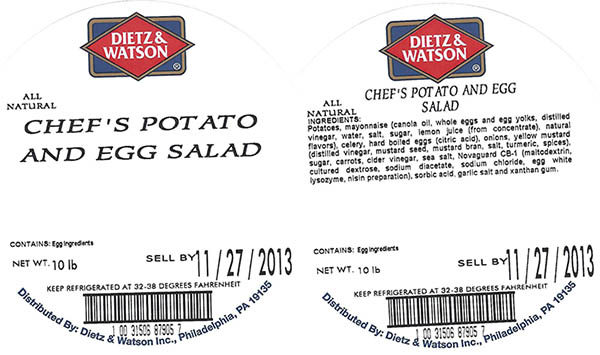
RECALLED – Prepared salads

October 24, 2013 – Product Recall – Boston Salads and Prepared Foods Recalling Ready-To-Eat Products Because of Possible Health Risk.